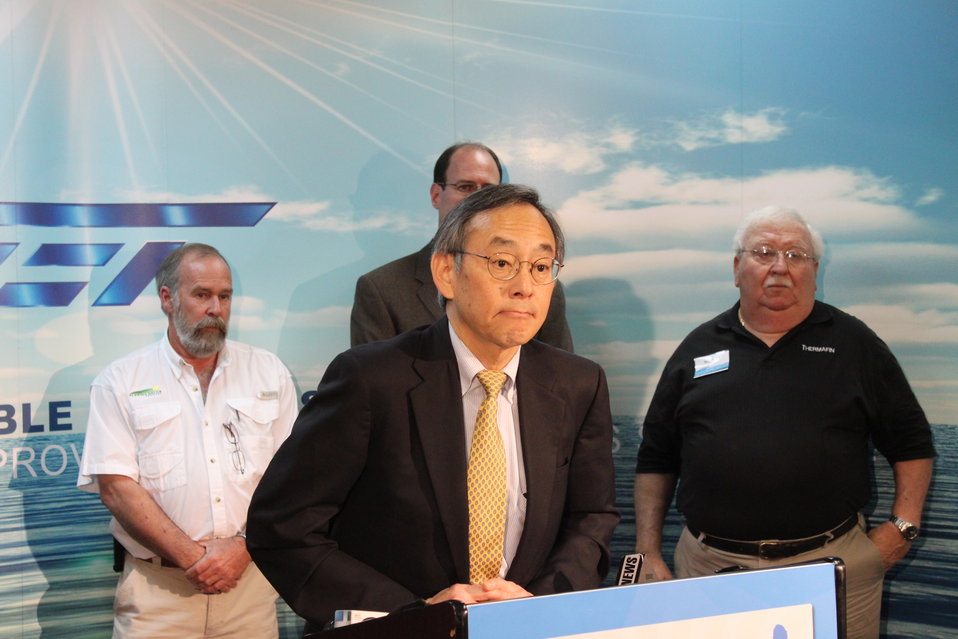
Norm 073